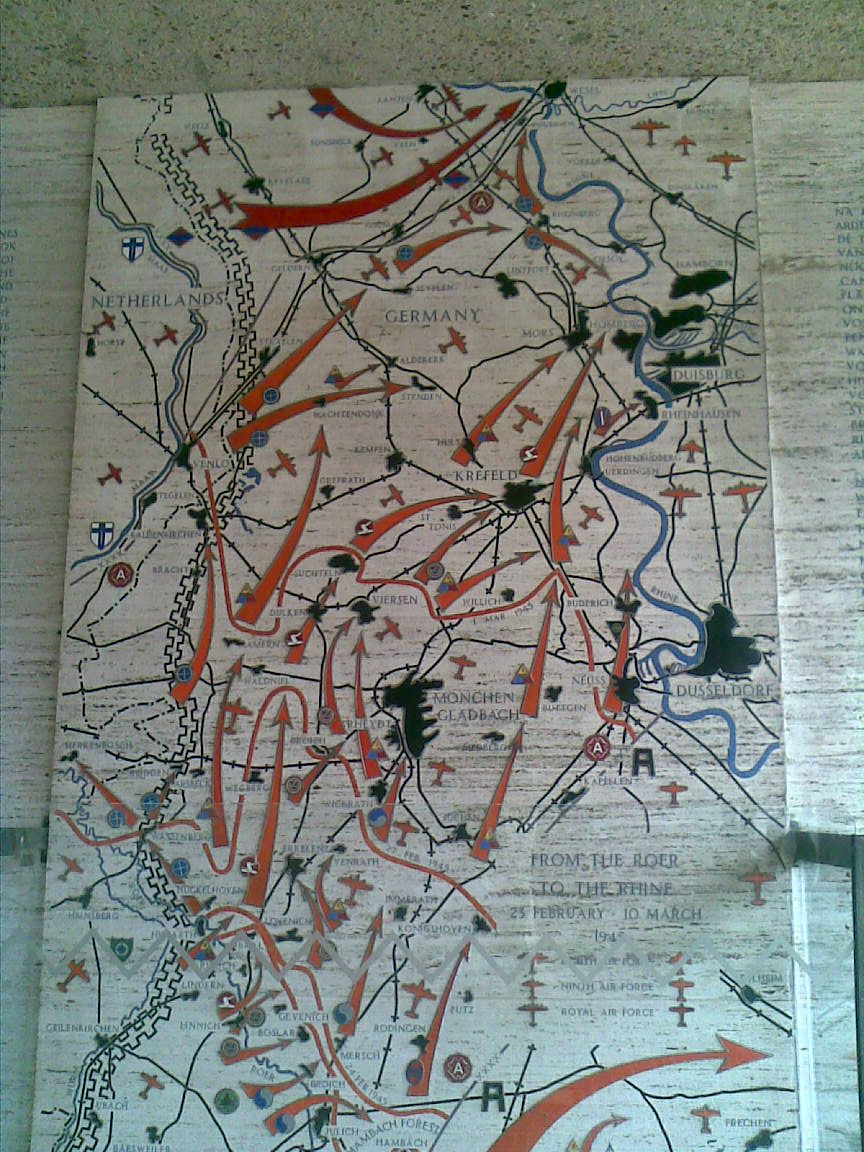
Deutsch: Netherlands American Cemetery, Militärische Operationen